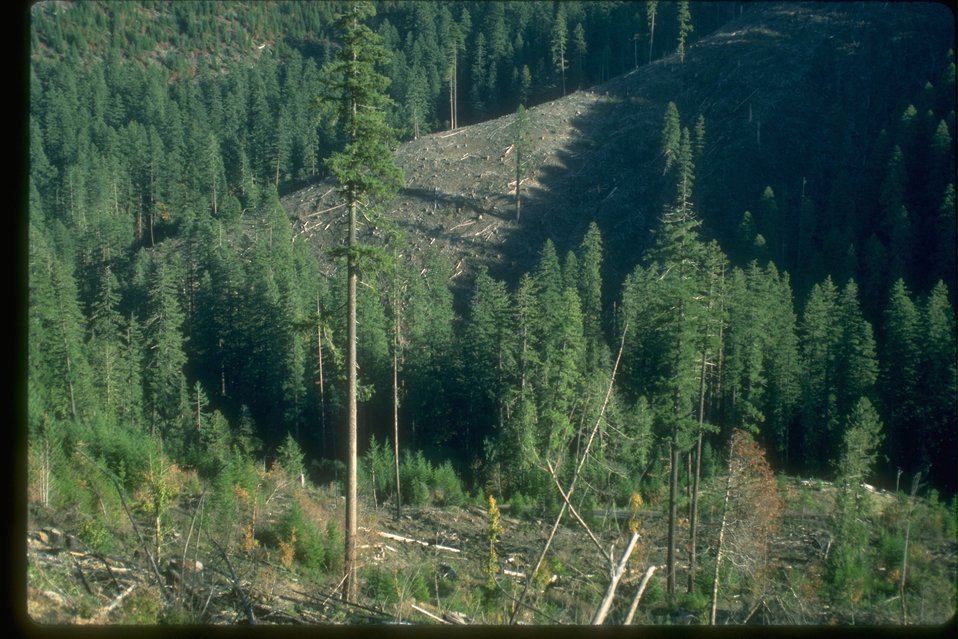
View of a clear cut site.